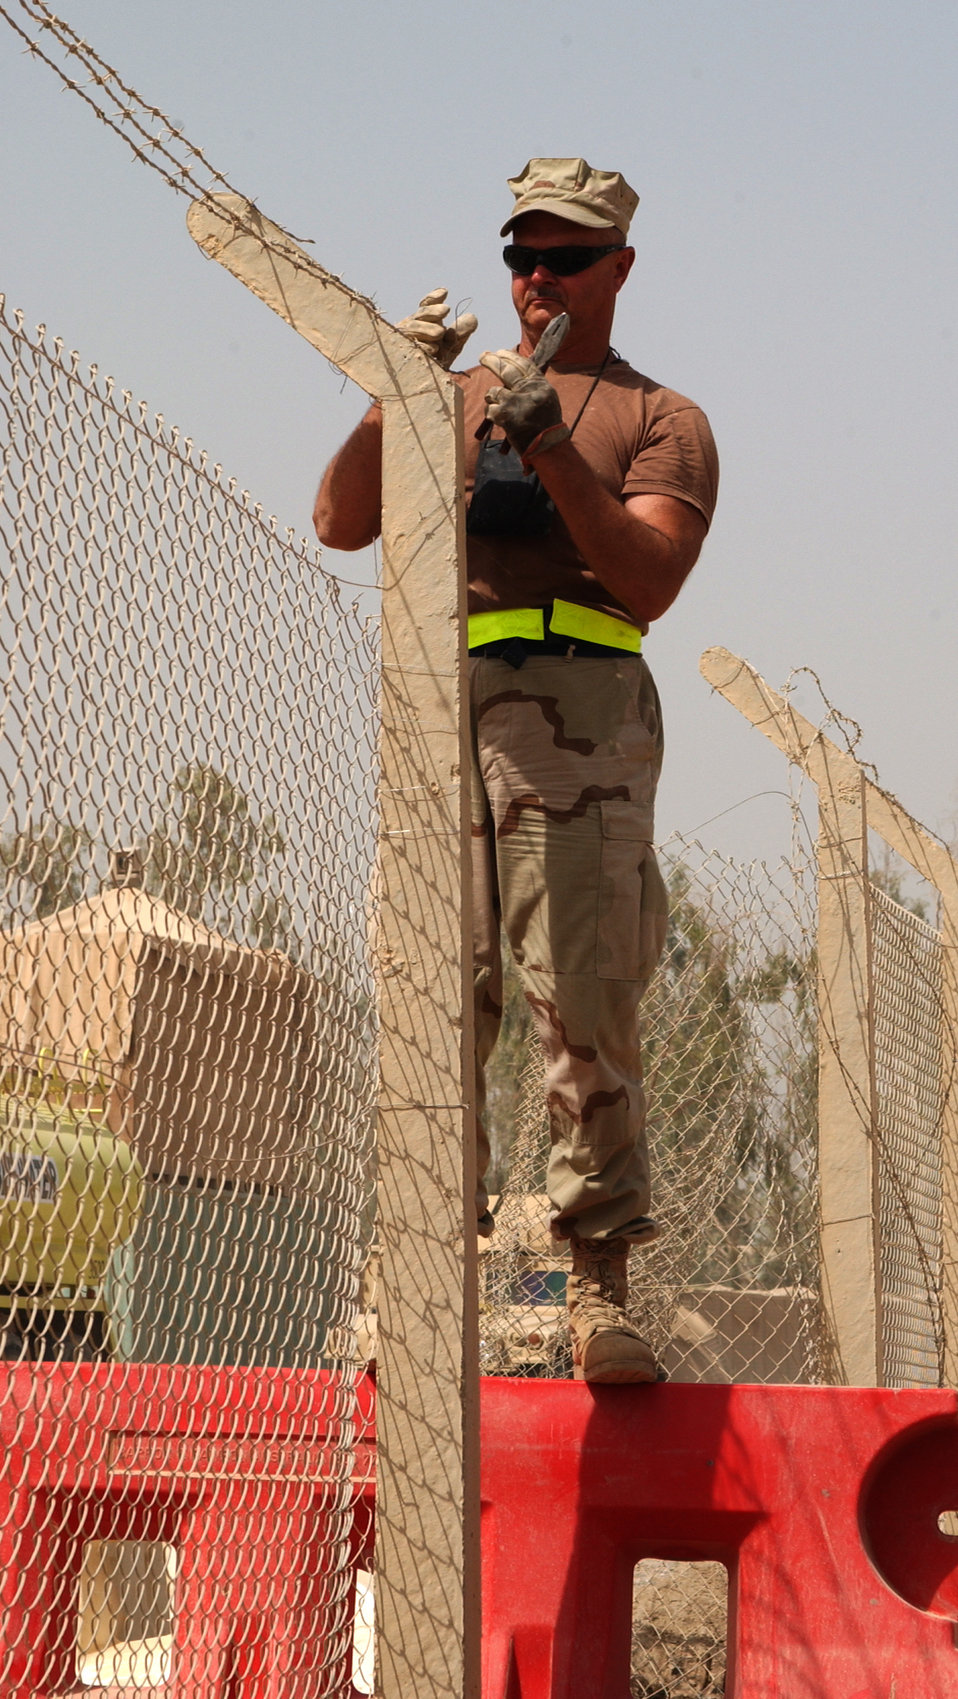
Airmen, Soldiers open lines of communication

BAGHDAD, Iraq -- Chief Master Sgt. John Adams makes a temporary opening in a fence line to allow workers to dig a trench for ductwork that will house new fiber optics cable here. He is the U.S. Central Command Air Forces-Forward fiber optics project leader and is deployed from the Illinois Air National Guard's 217th Engineering and Installation Squadron.